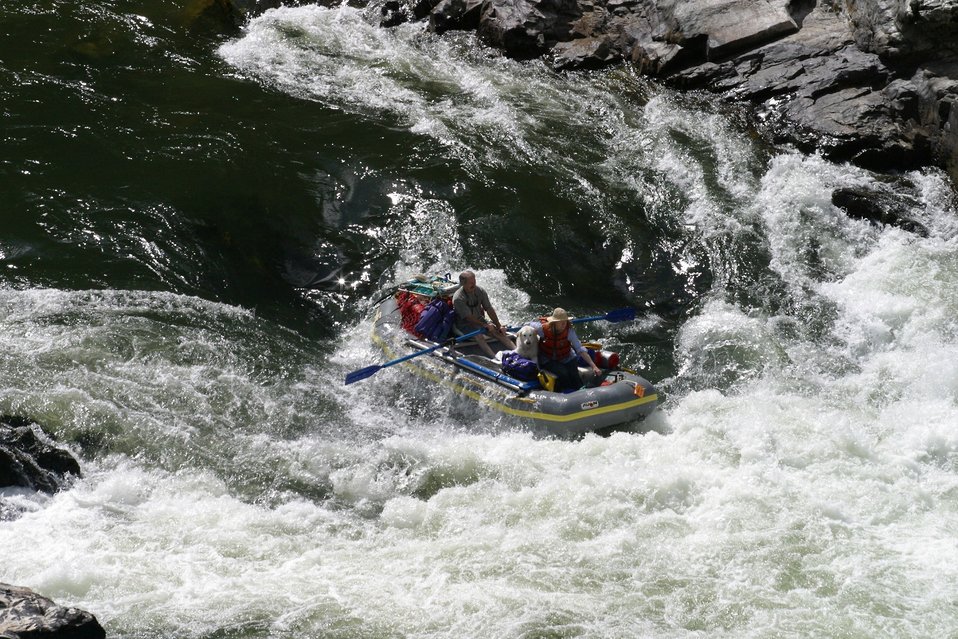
Boaters in Grave Creek Rapids